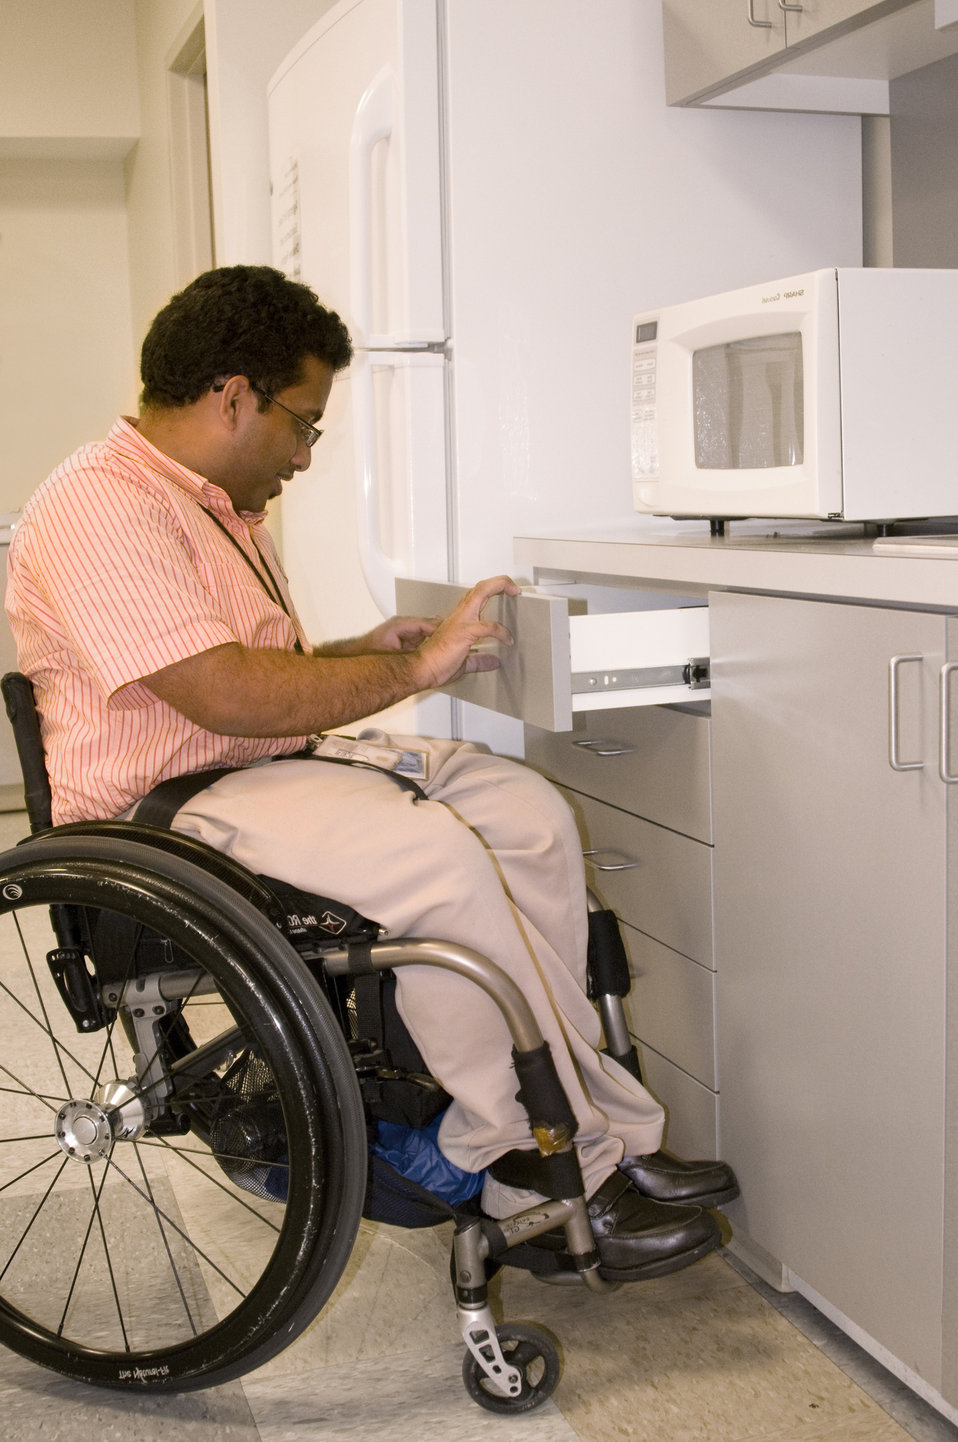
This man who was seated in his wheelchair, was photographed in this kitchen setting while opening a cabinet drawer. Note that the height of the drawer was situated at a highly-accessible level to all who would need to place, or obtain contents from this location. You can see that the microwave oven, and even the overhead cabinets are also accessible to this person, and therefore, universally-accessible to all.